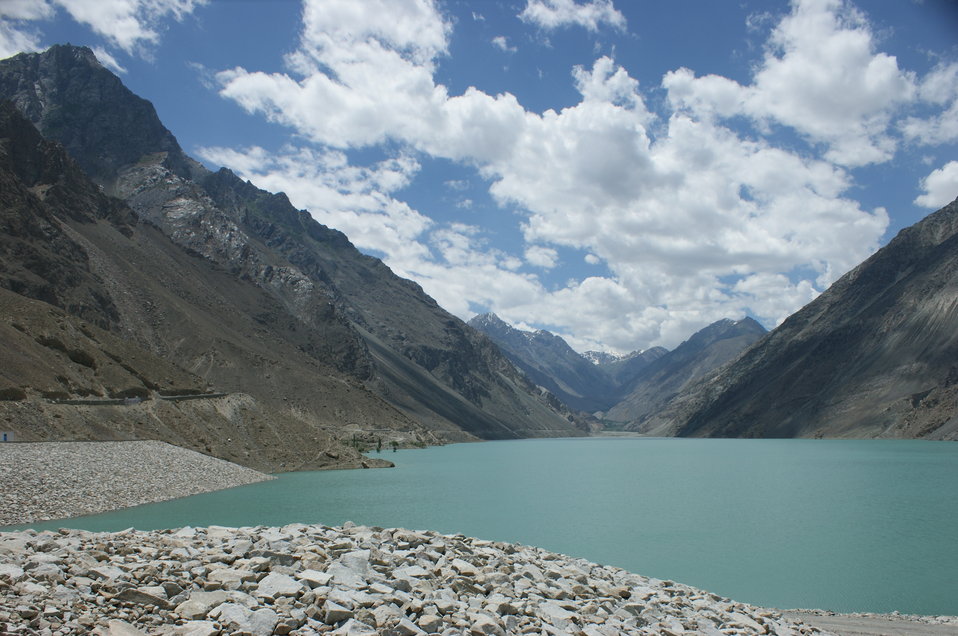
Satpara